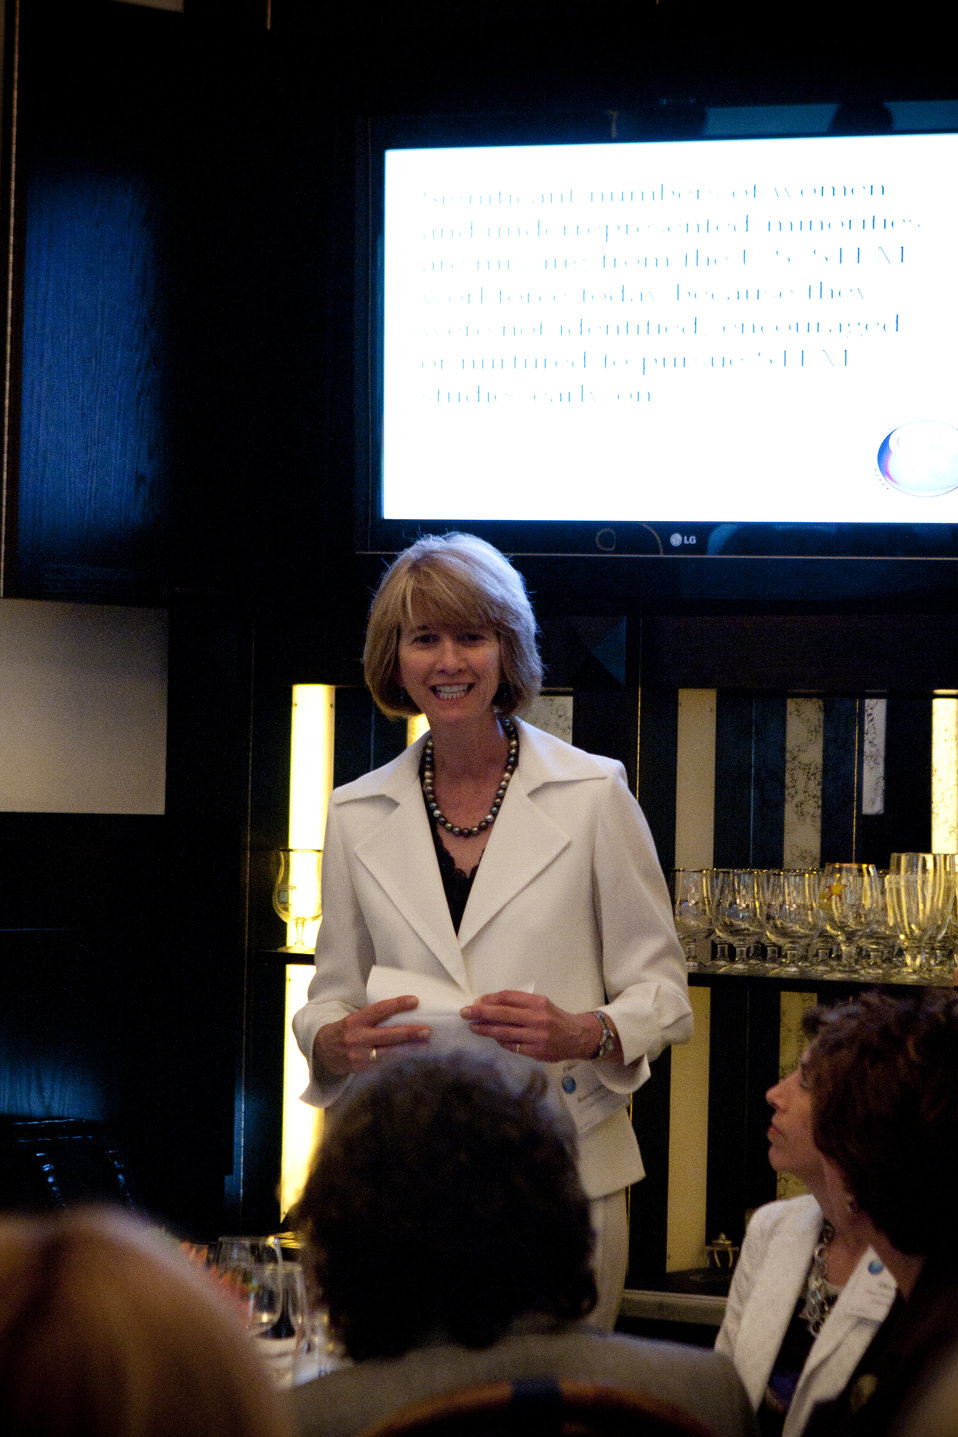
WomenandEnergy 54